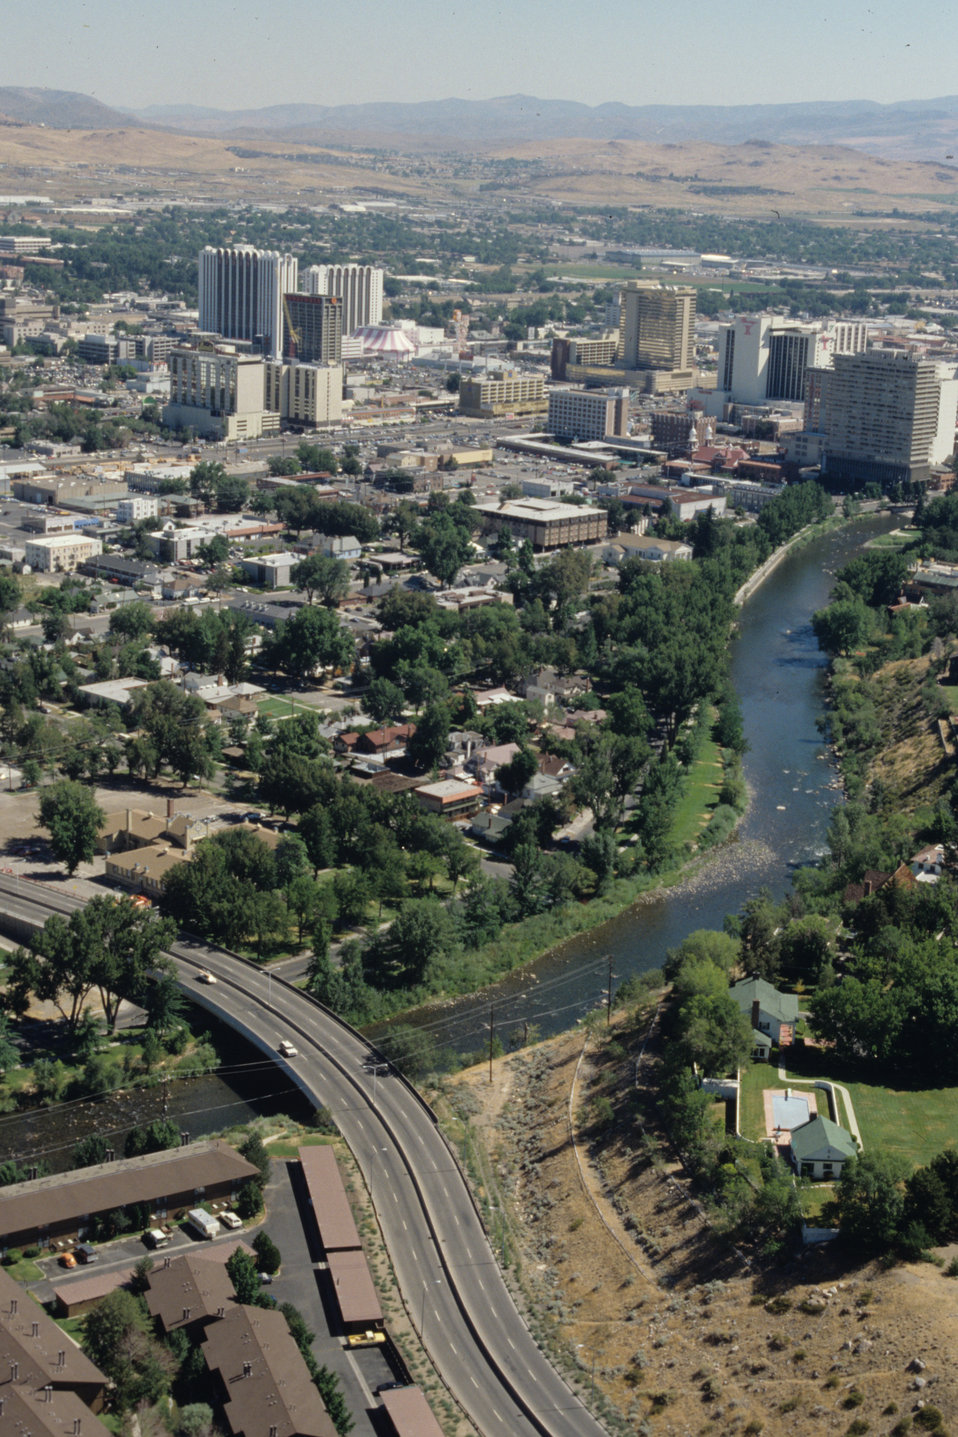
Truckee River in Reno

RENO,Nv--The Truckee River flows through downtown Reno, Nevada.